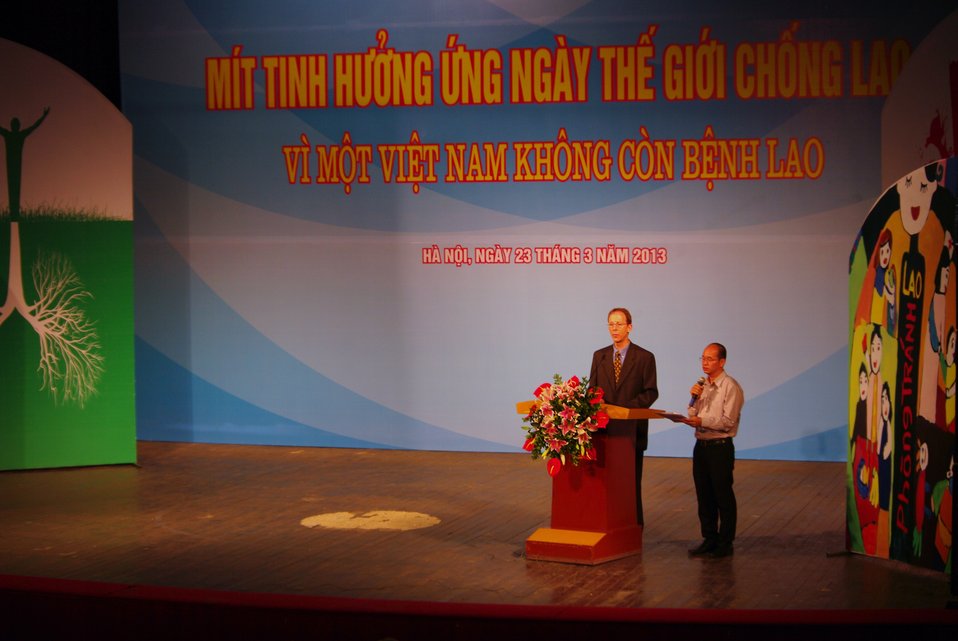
USAID Mission Director Joakim Parker speaks at Vietnam's World TB Day Event in Hanoi

March 23, 2013